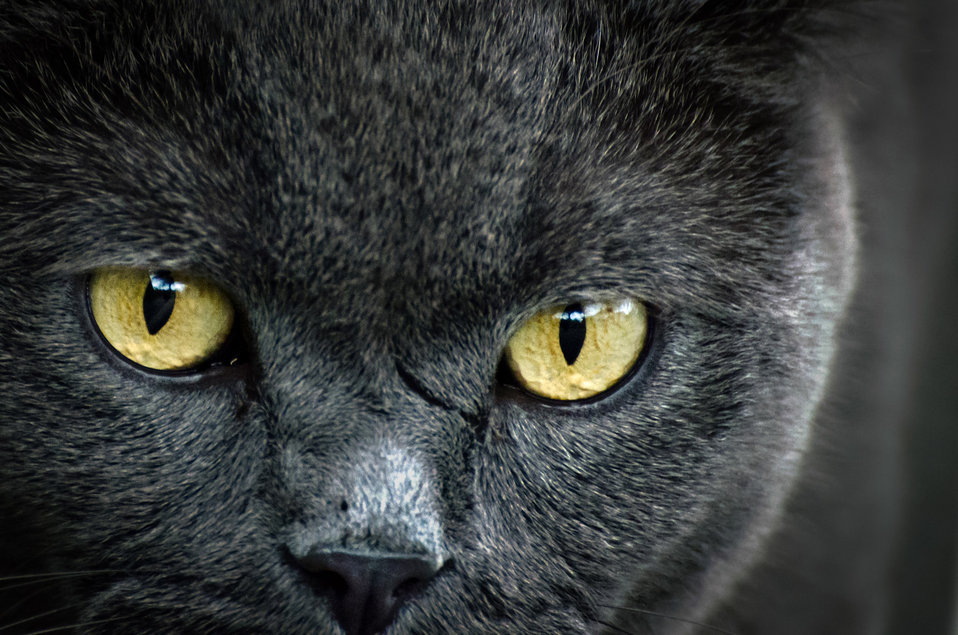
Cat - animals.